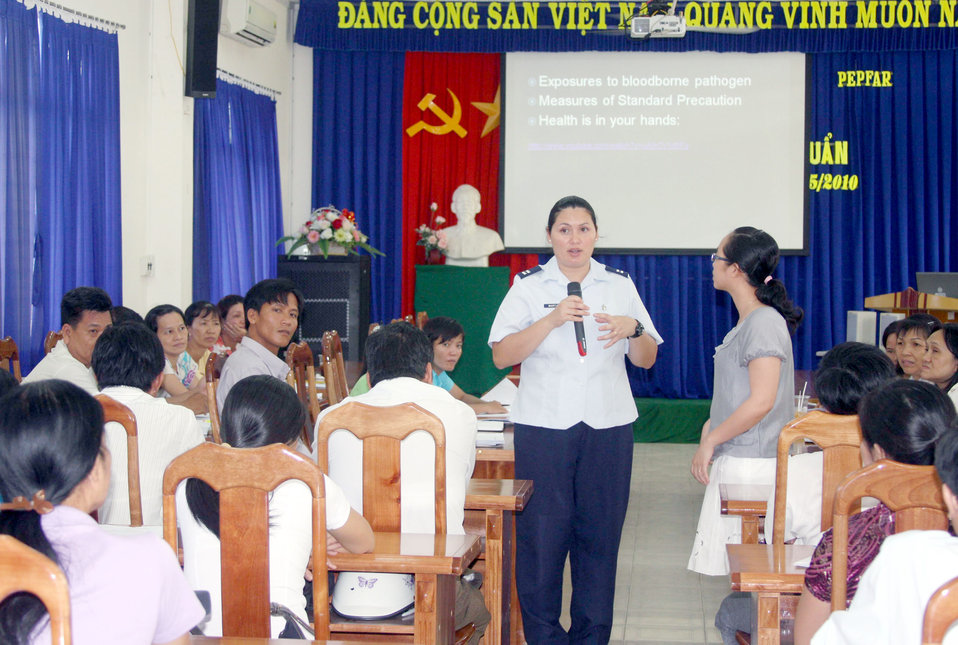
U.S., Vietnam talk infectious diseases during Pacific Angel 2010

Capt. Katrina Martinez speaks at a forum to exchange information with Vietnamese health professionals May 11, 2010, at Can Tho Medical College in Can Tho, Vietnam. As part of Pacific Angel 2010, the forum discussed infections disease control and prevention. Captain Martinez is assigned to the 36th Medical Group at Andersen Air Force Base, Guam.